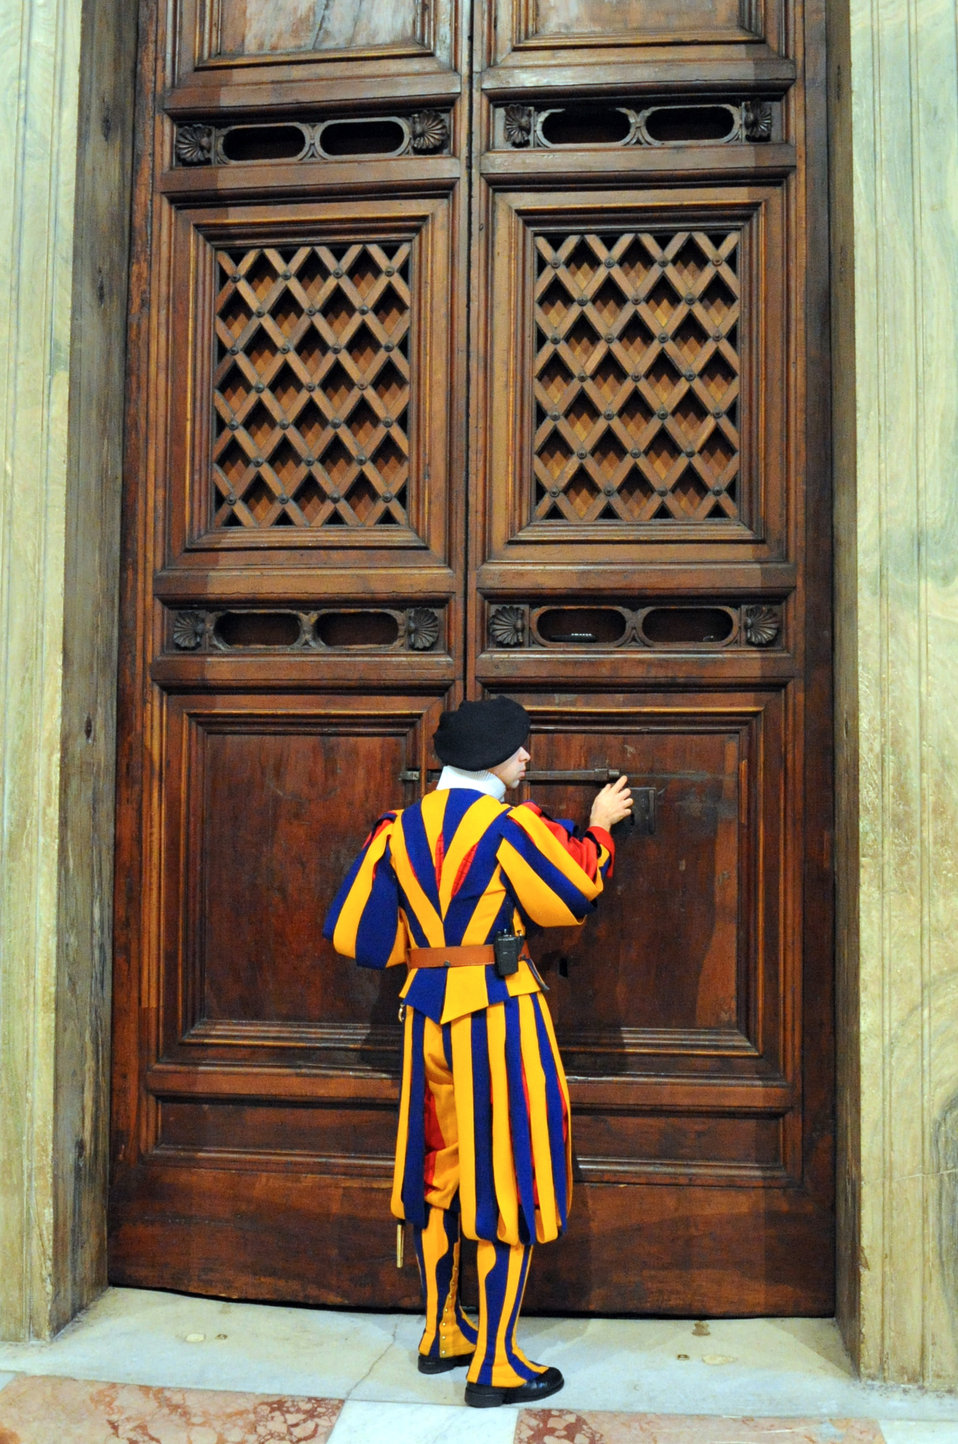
A Swiss Guard Unlocks the Door Outside of the Sistine Chapel for Secretary Kerry

A member of the Swiss Guard unlocks a door leading to the Sistine Chapel as Chief of Protocol Monsignor Jose Bettancourt gives U.S. Secretary of State John Kerry a tour of the Vatican during a visit to Vatican City and Rome, Italy, on January 14, 2014.